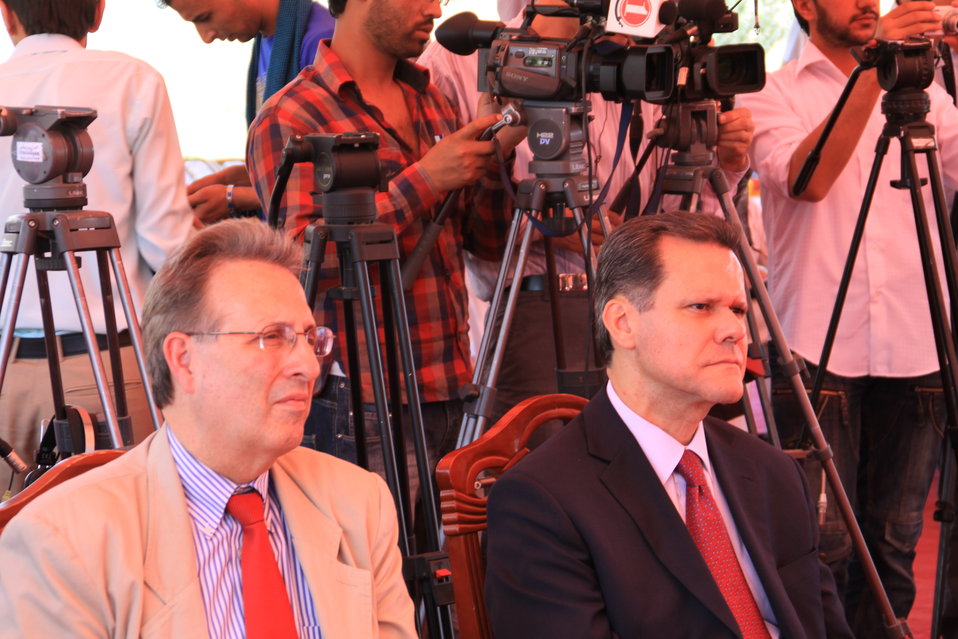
Badam Bagh Farm